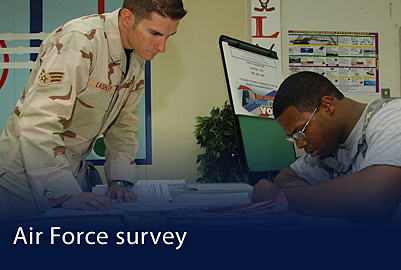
2010 AF Climate Survey